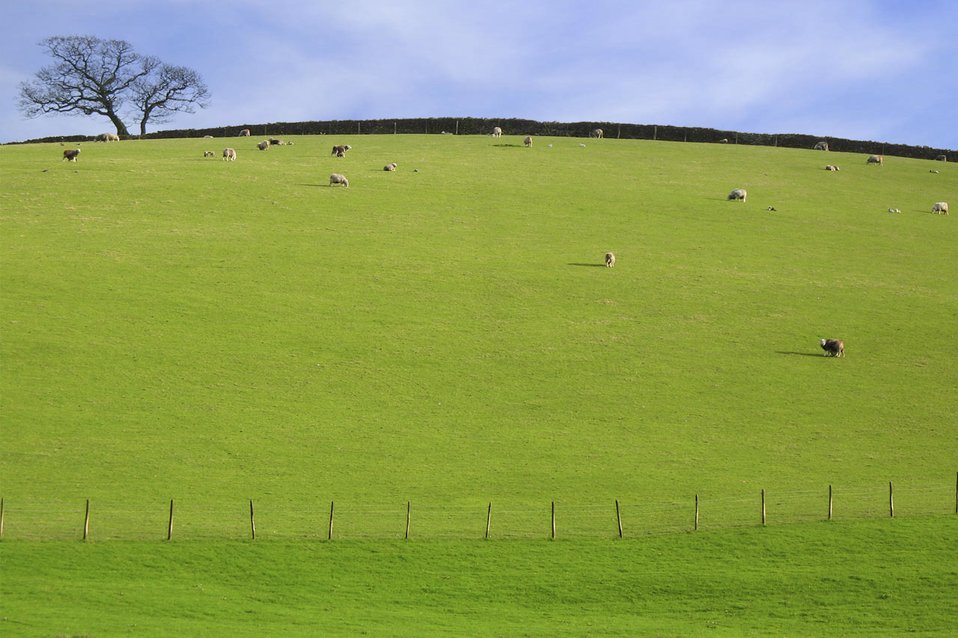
Pastureland with a tree on horizon.